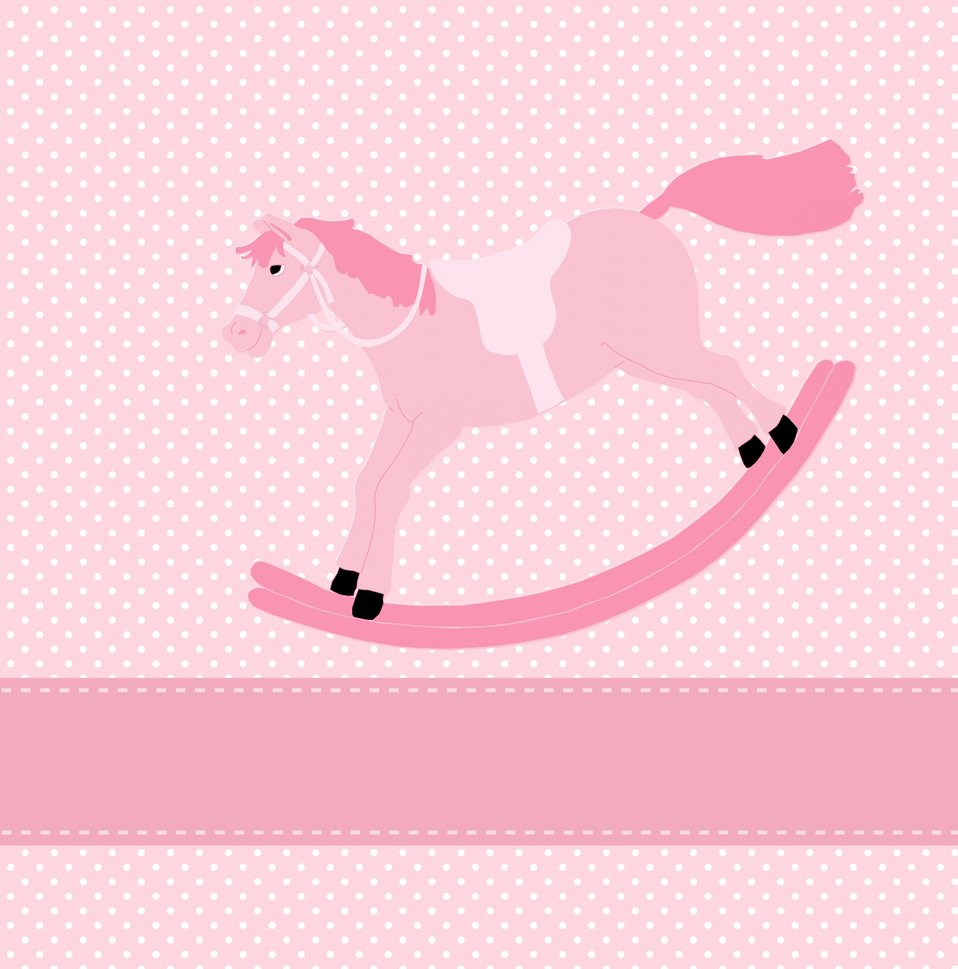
Baby girl arrival card

New baby girl arrival announcement card template with rocking horse and polka dots.